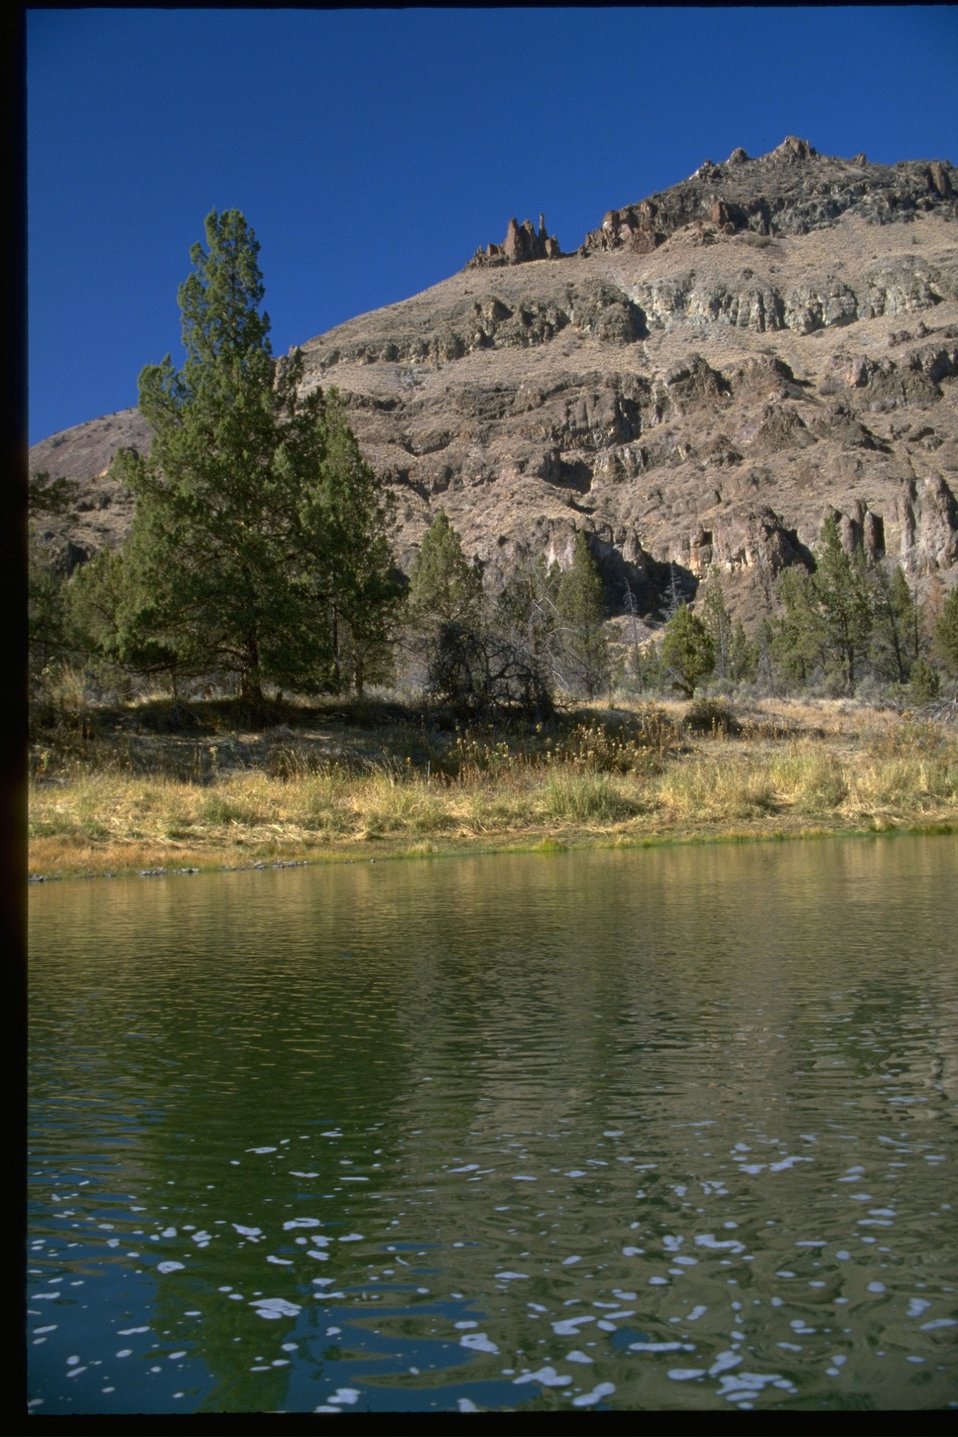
Rocky peaks above juniper in what appears to be a dispersed campground along the John Day River.